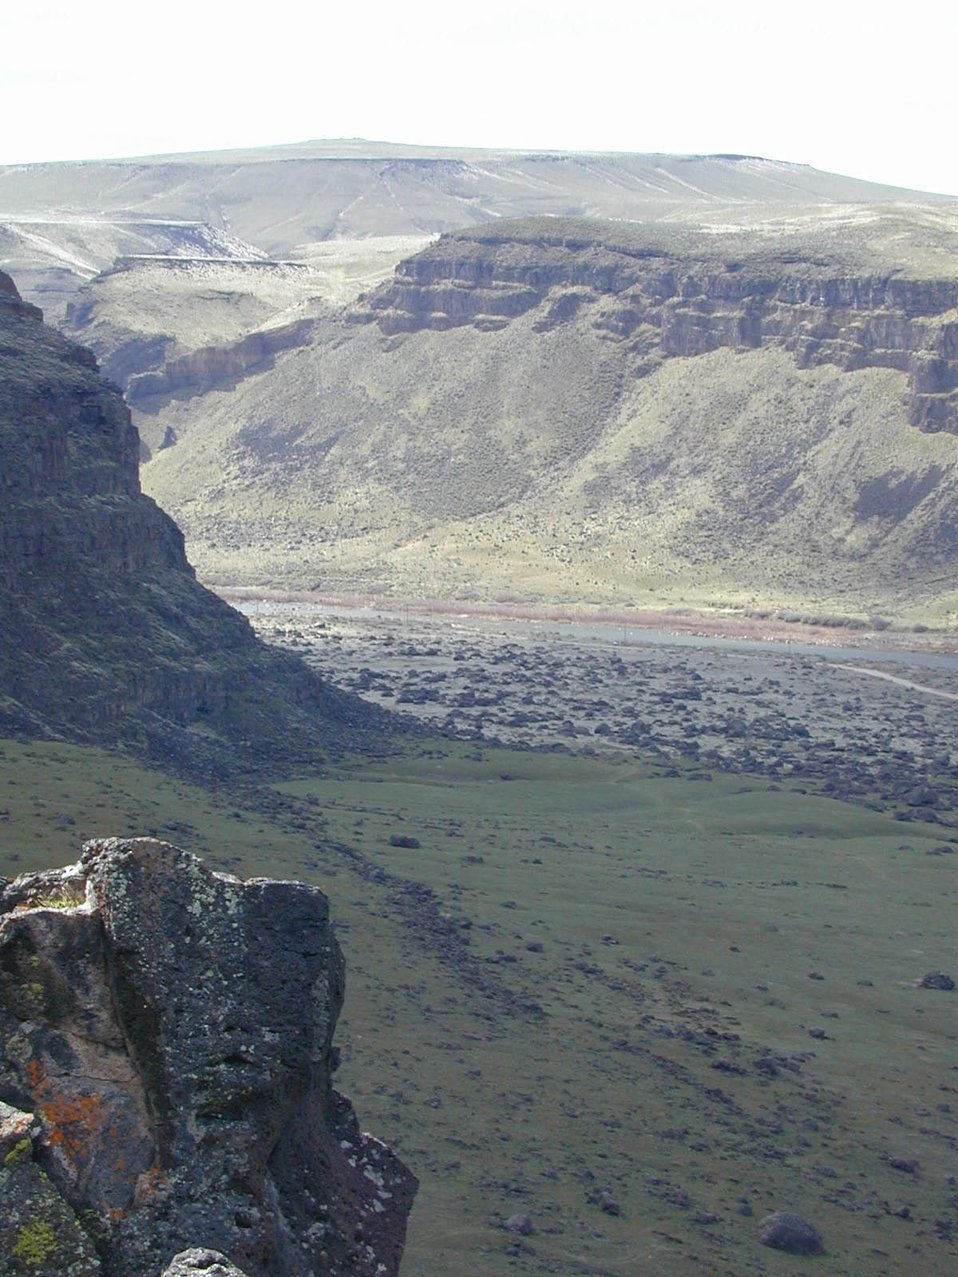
LSRD Lower Snake River District Snake River Birds of Prey National Conservation Area Snake River Canyon Scenic